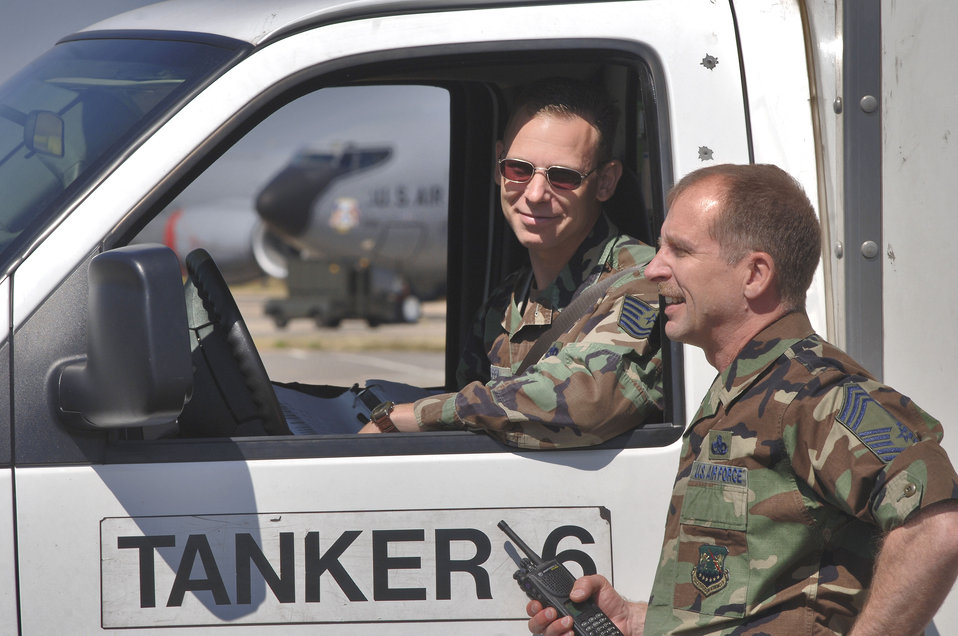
Mildenhall's tanker services in high demand

Chief Master Sgt. Brian Allison (right) and Tech. Sgt. Edward Pfeifer discuss maintenance for a KC-135 Stratotanker at Royal Air Force Mildenhall on July 24. Chief Allison is the 100th Maintenance Group superintendent and Sergeant Pfeifer is a group expediter. The group has 14 Airmen on each 12-hour shift to keep the 100th Air Refueling Wing's 15 tankers, all nearly 50 year old, ready to fly.